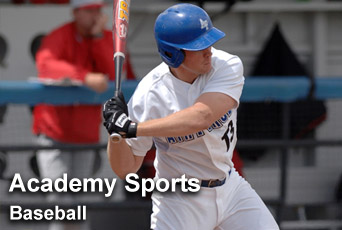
Academy sports: Baseball

For up-to-date scores on all U.S. Air Force Academy sports, visit their Web site at www.goairforcefalcons.com.